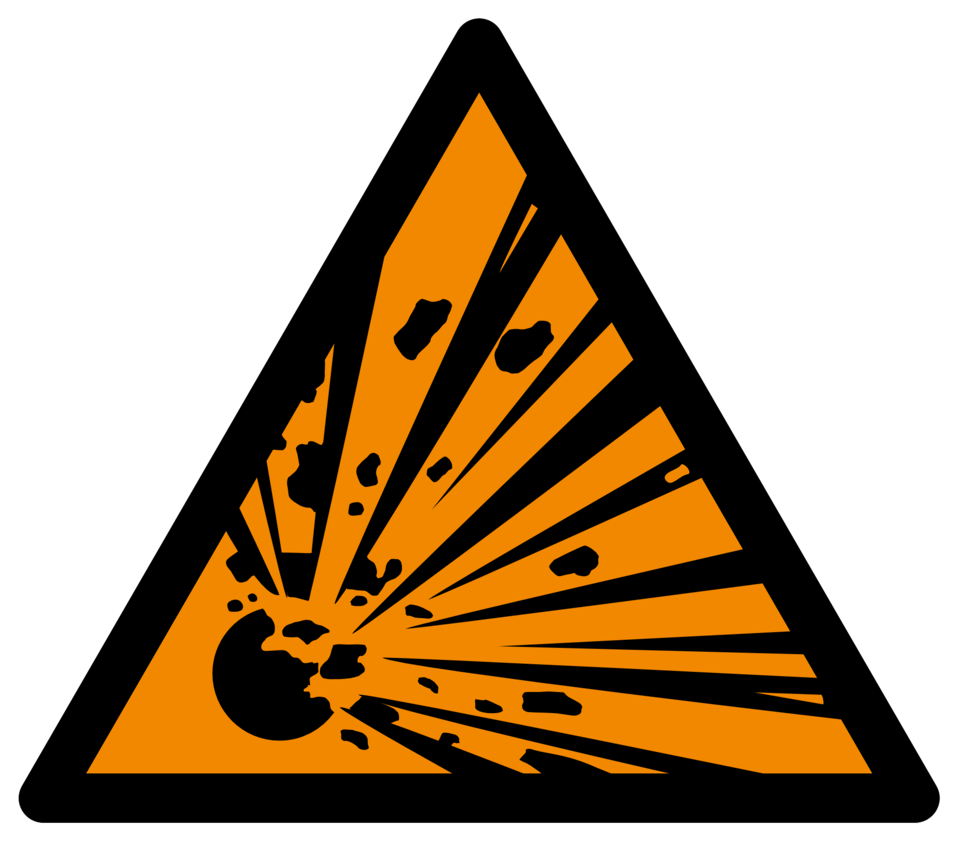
Deutsch: Warnung vor explosionsgefährlichen Stoffen, Warnzeichen D-W002 nach DIN 4844-2 Explosive substances, warning sign D-W002 according to German standard DIN 4844-2